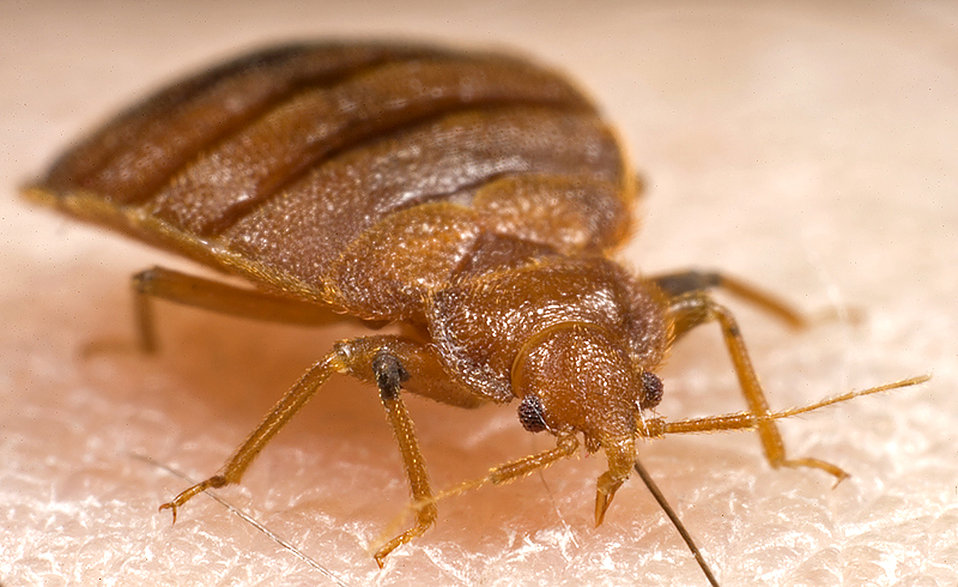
This 2006 photograph depicted a frontal view of an adult bedbug, Cimex lectularius, as it was in the process of ingesting a blood meal from the arm of a 'voluntary' human host.Bedbugs are not vectors in nature of any known human disease. Although some disease organisms have been recovered from bedbugs under laboratory conditions, none have been shown to be transmitted by bedbugs outside of the laboratory. Bedbug bites are difficult to diagnose due to the variability in bite response between people, and due to the change in skin reaction for the same person over time. It is best to collect and identify bedbugs to confirm bites. Bedbugs are responsible for loss of sleep, discomfort, disfiguring from numerous bites and occasionally bites may become infected.